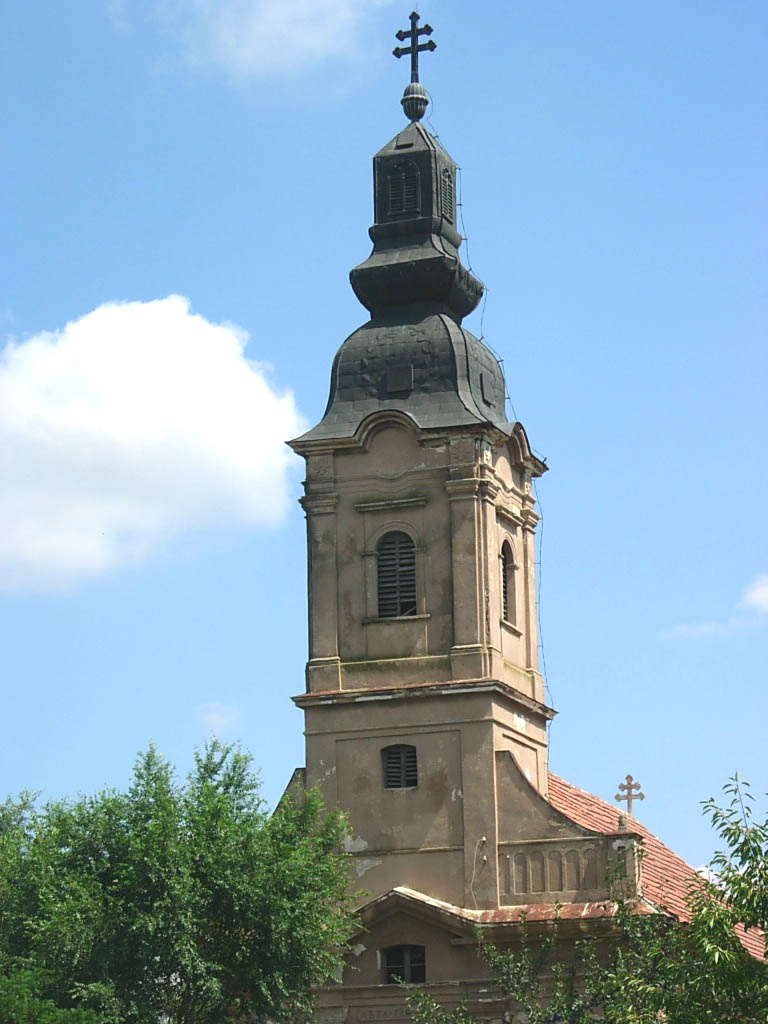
Padej Orthodox church